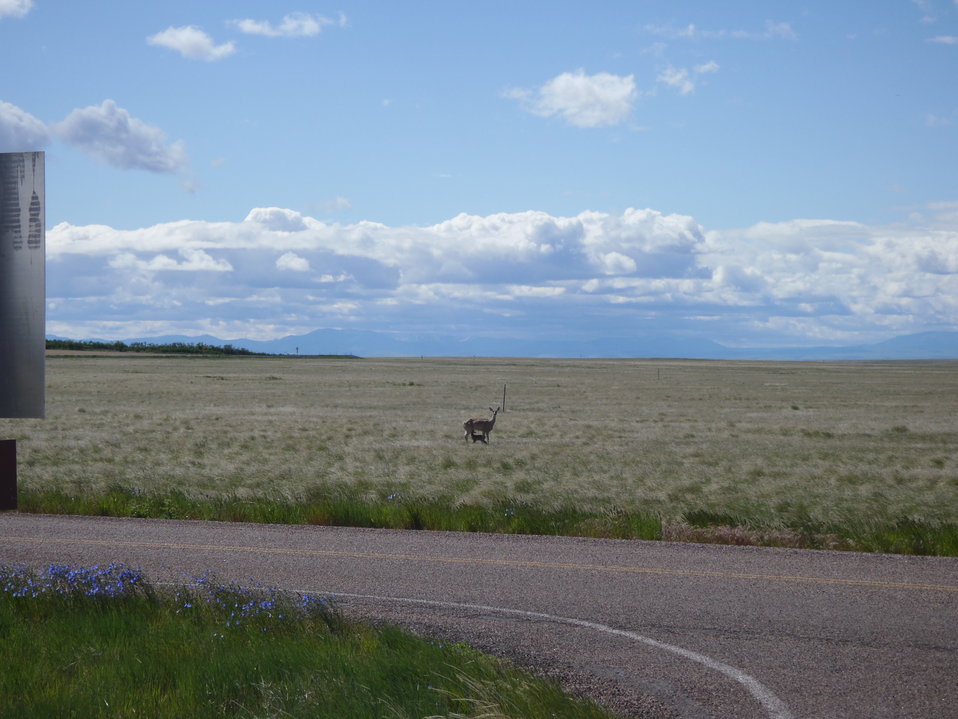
White-tailed Deer Doe Nursing her Fawn (Odocoileus virginianus)

A White-tailed deer doe nurses her fawn on the Benton Lake NWR prarie.